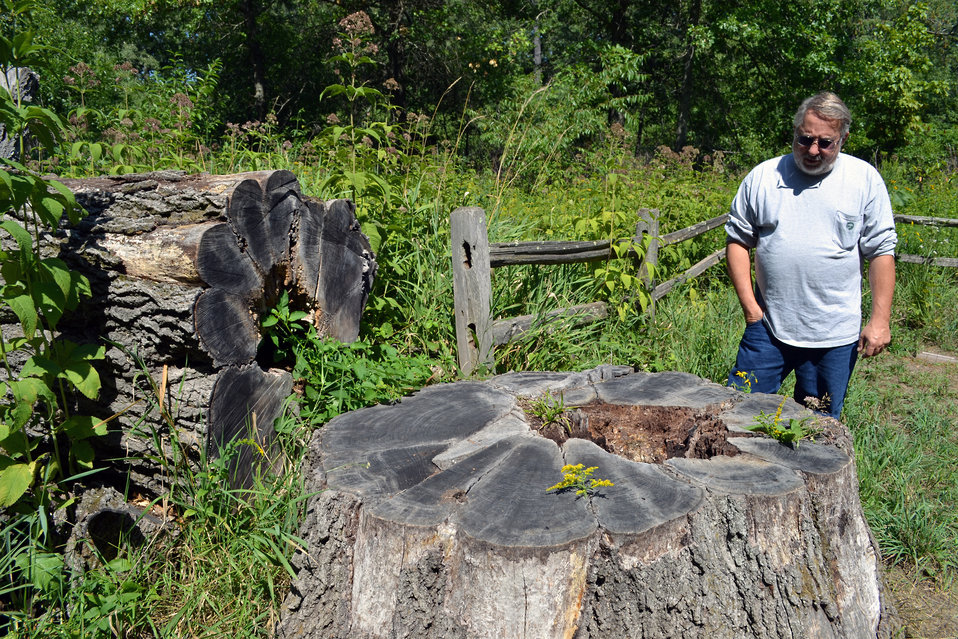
The Sentinel

McHenry County Conservation District Natural Resource Manager Ed Collins shares the story of The Sentinel, a black oak that lived for more than 300 years.